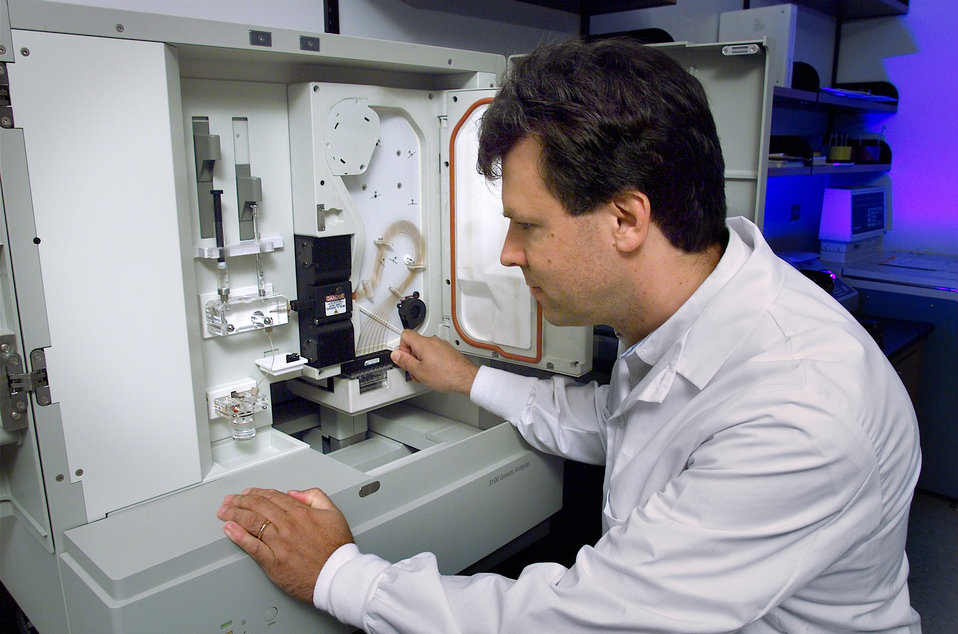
Roger Morey, of the Centers for Disease Control's Meningitis and Special Pathogens Branch (MSPB) in the National Center for Infectious Diseases (NCID), was shown here performing DNA sequencing in a Centers for Disease Control and Prevention (CDC) laboratory.